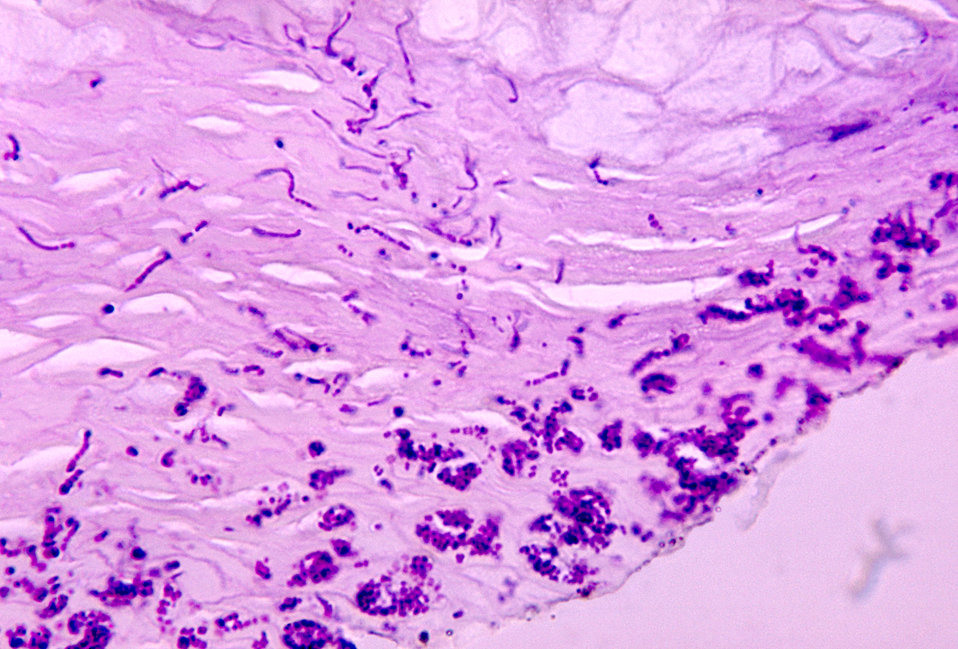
This tissue specimen shows signs of Pitted Keratolysis due to a Dermatophilus sp. infection; using a PAS stain.